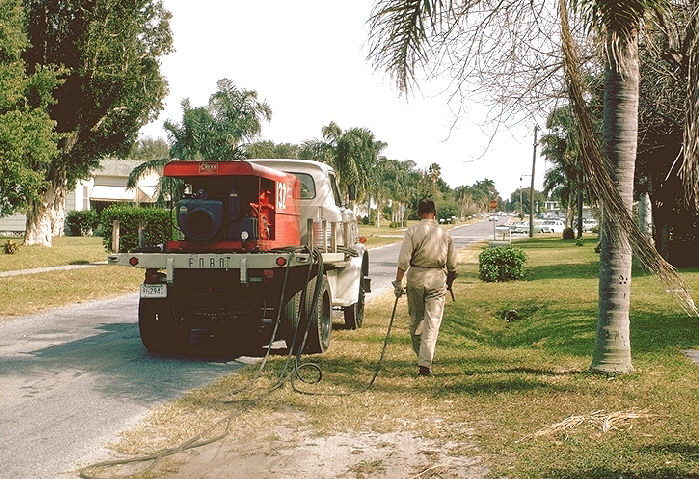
Worker sprays ditch to kill any mosquito larvae that might be present.